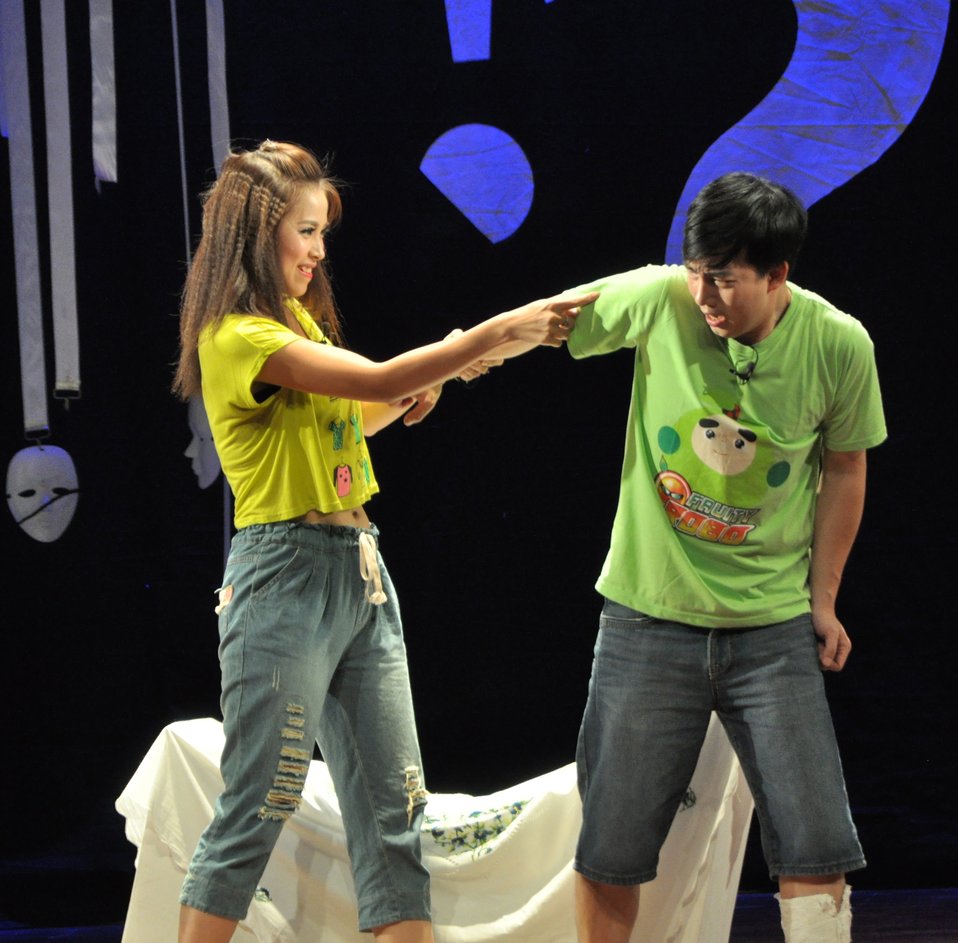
PEPFAR Musical Questions and Exclamations

Hanoi, May 17, 2013